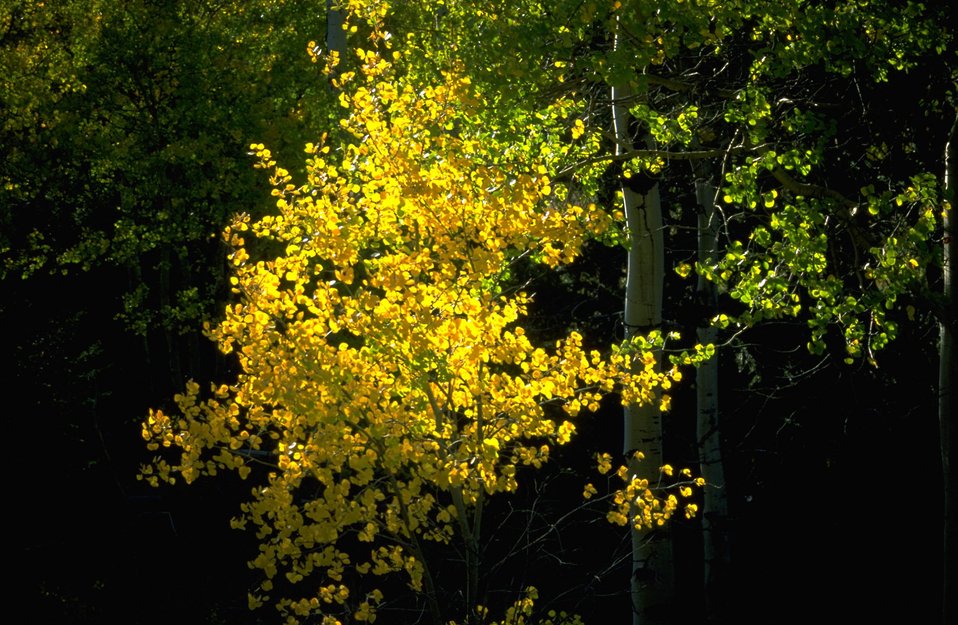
Aspen tree beginning to turn colors